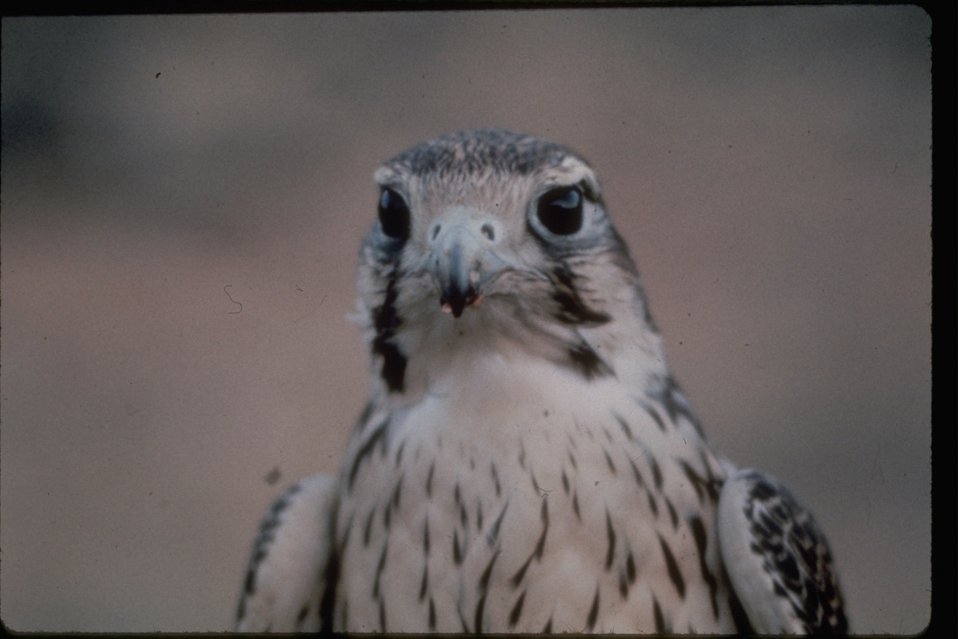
Close up frontal view of a hawk.